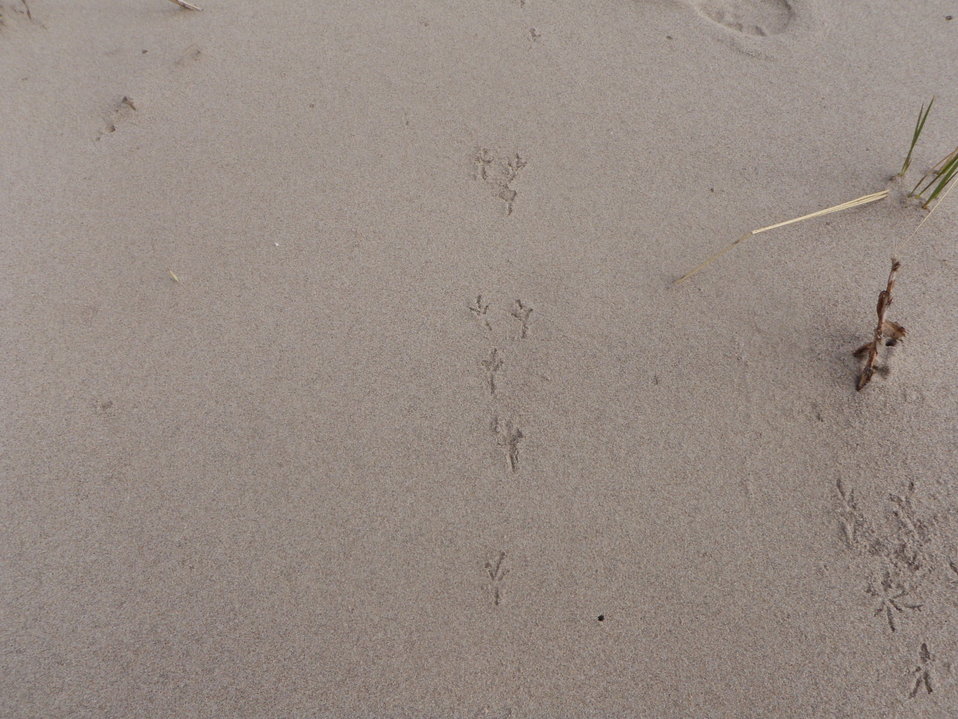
Piping plover tracks at Amagansett.